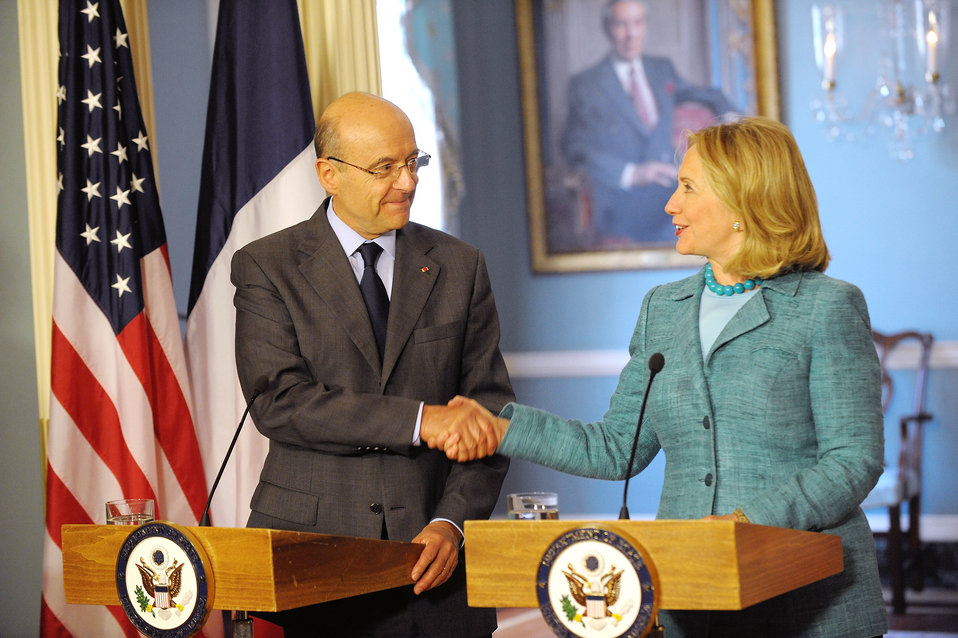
Secretary Clinton Shakes Hands With French Foreign Minister Juppe

U.S. Secretary of State Hillary Rodham Clinton shakes hands with French Foreign Minister Alain Juppe after their joint press conference, at the U.S. Department of State in Washington, D.C., on June 6, 2011.